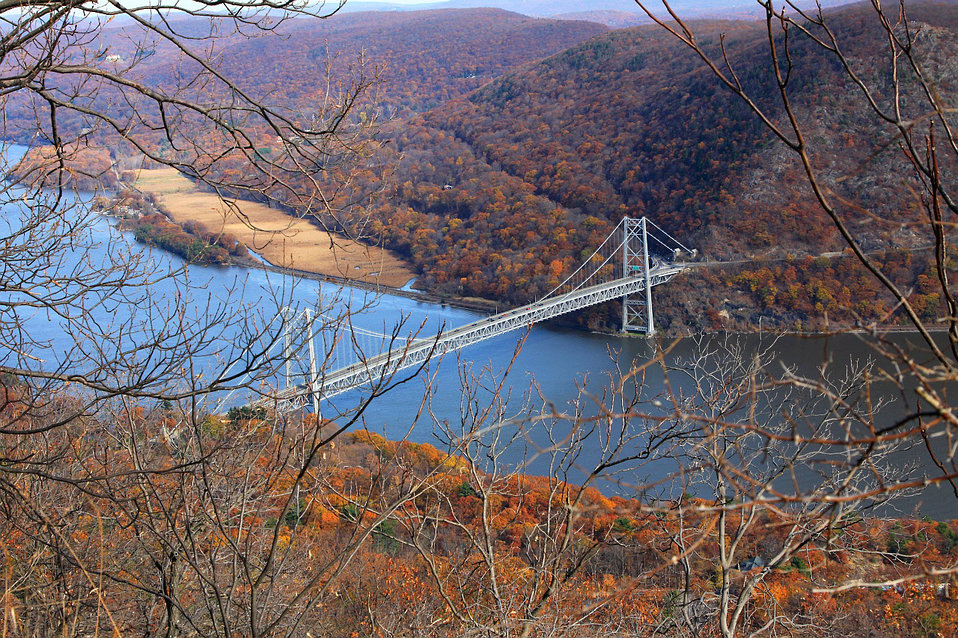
The bridge

Mountain bridge seen from top of the hill.